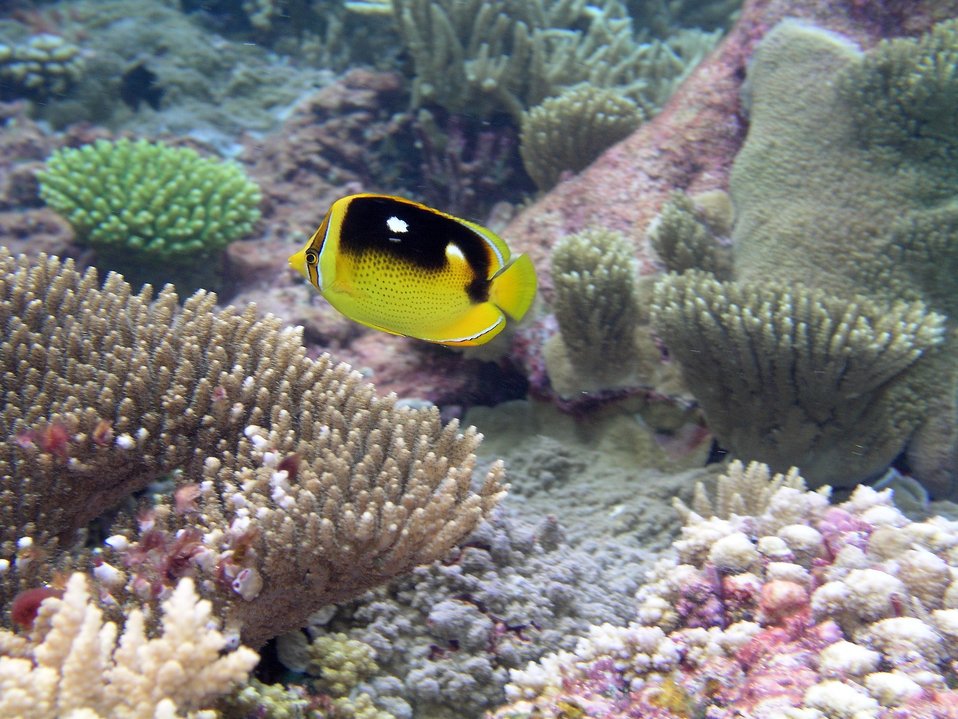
Butterfly fish at Palmyra Island NWR

Butterfly flish swim among the coral at Palmyra Atoll National Wildlife Refuge in the Pacific.